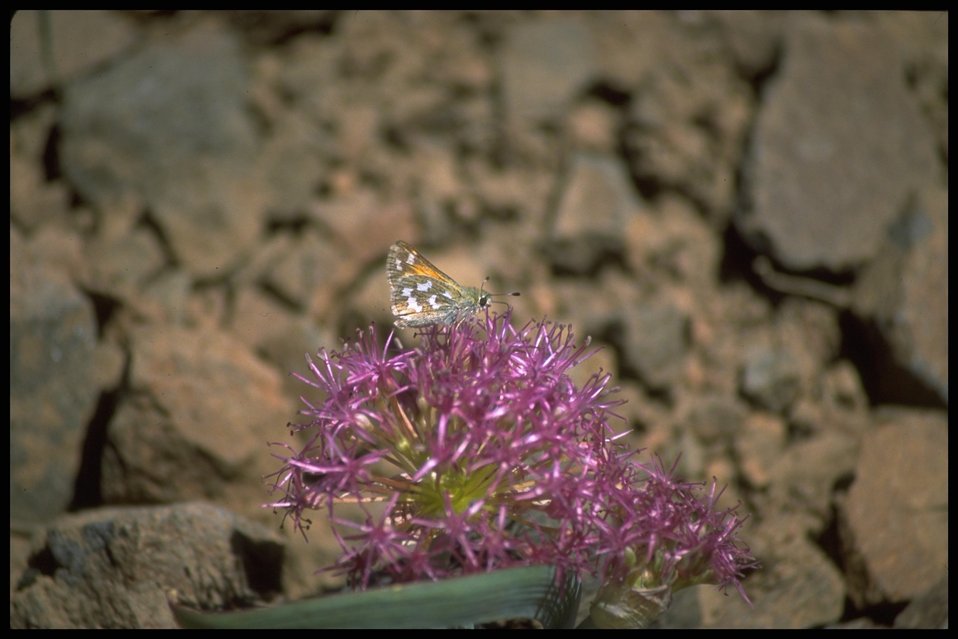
Close shot of Flat Stem Onion wildflower and butterfly, Lakeview District.